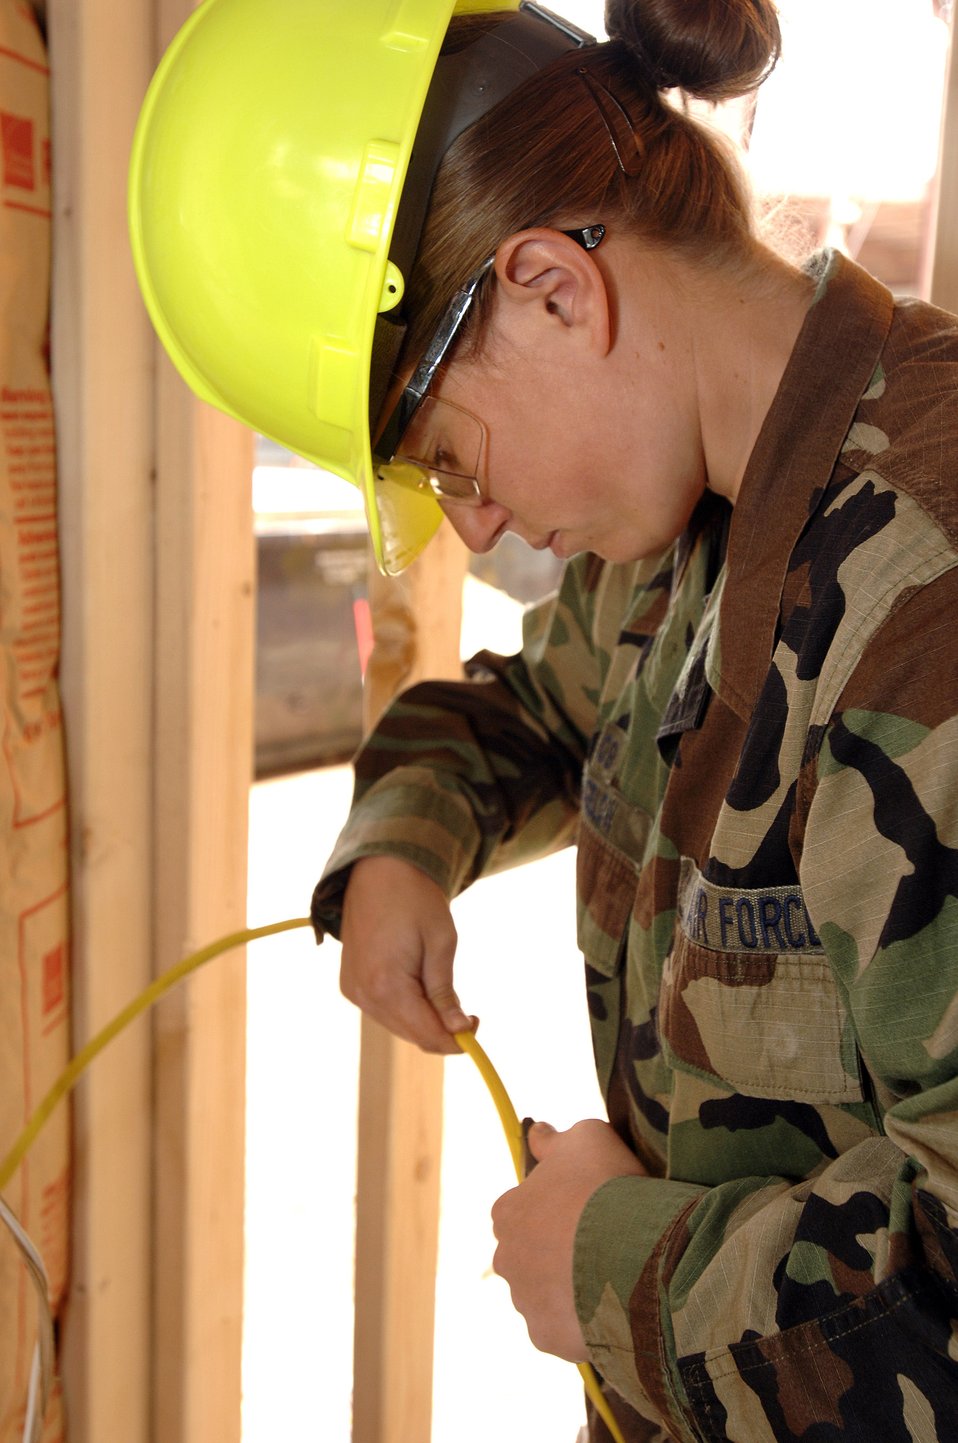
Summer lab gives cadets engineering experience

Air Force Academy Cadet 2nd Class Holly Bigalow installs wiring in a house being built by cadets during the Field Engineering and Readiness Laboratory course at the Academy. The course exposes cadets to several aspects of civil engineering, including heavy equipment operation, steel bridge construction, designing and pouring concrete beams and paving portions of a road.